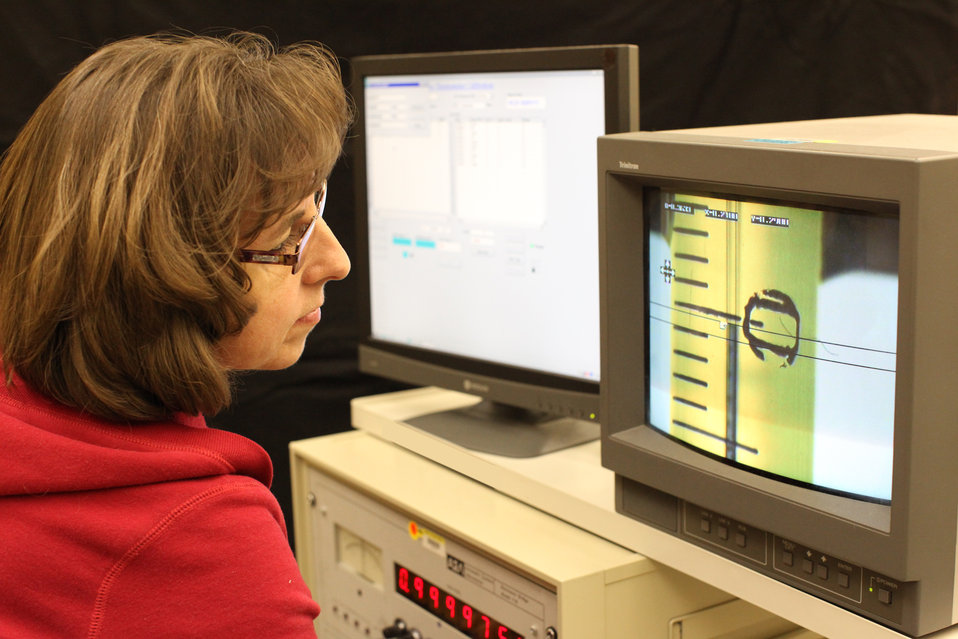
Thermometer; Mercury

NIST researcher Dawn Cross calibrates a mercury thermometer using the icepoint of water as a reference. NIST will cease to offer this service on March 1, 2011, in order to support efforts to reduce the amount of mercury in the environment.